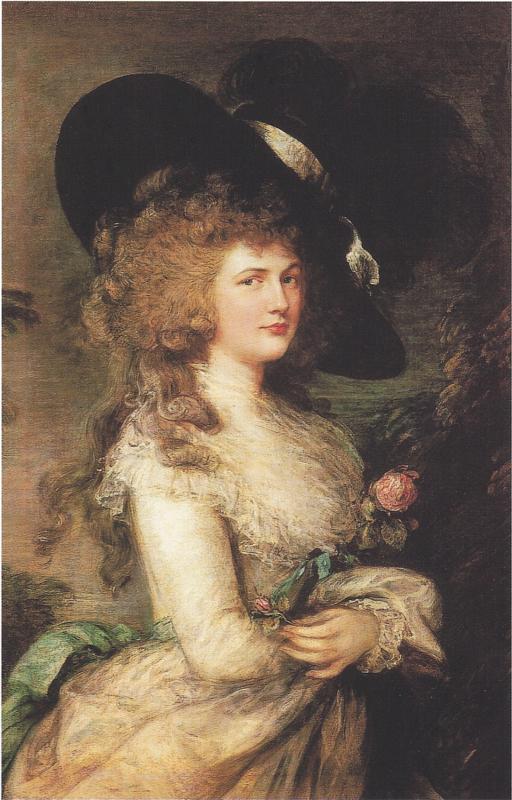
Thomas Gainsborough - Portrait of Georgiana, Duchess of Devonshire